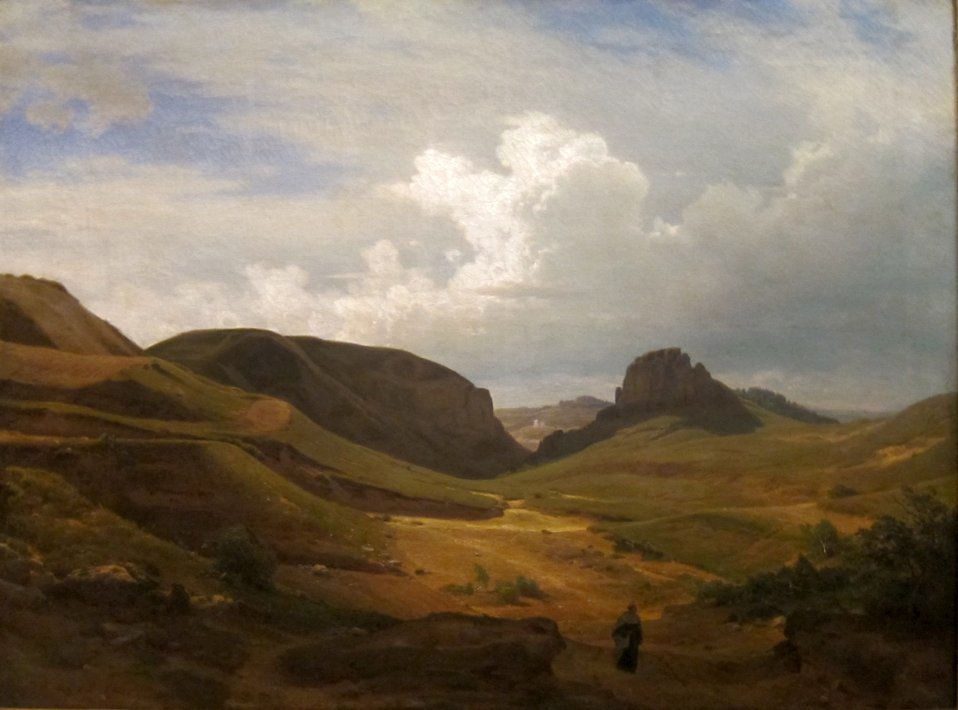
'Landscape' by Carl Friedrich Lessing, Cincinnati Art Museum